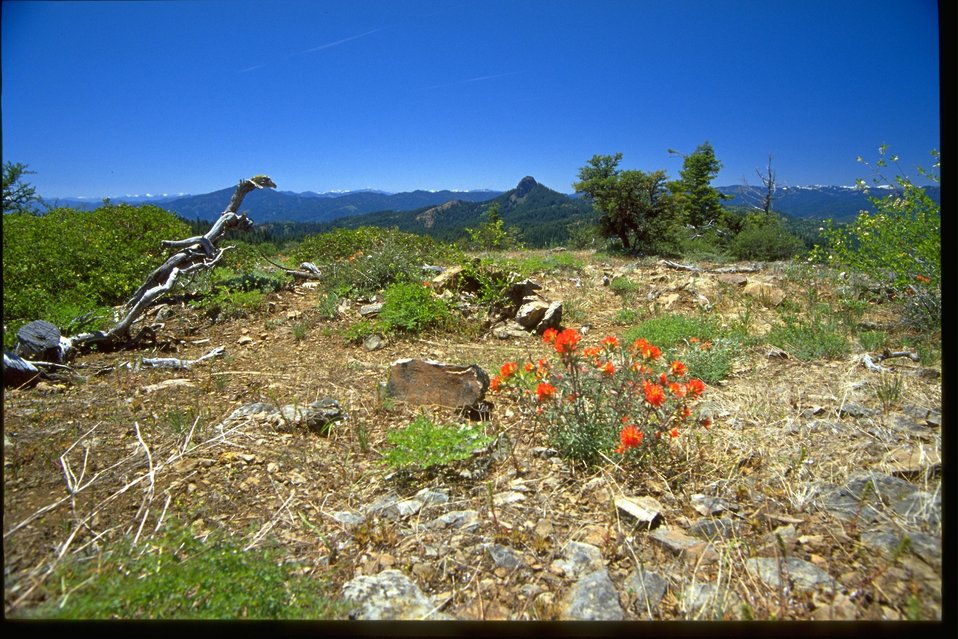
Indian Paintbrush with Pilot Rock in the background.